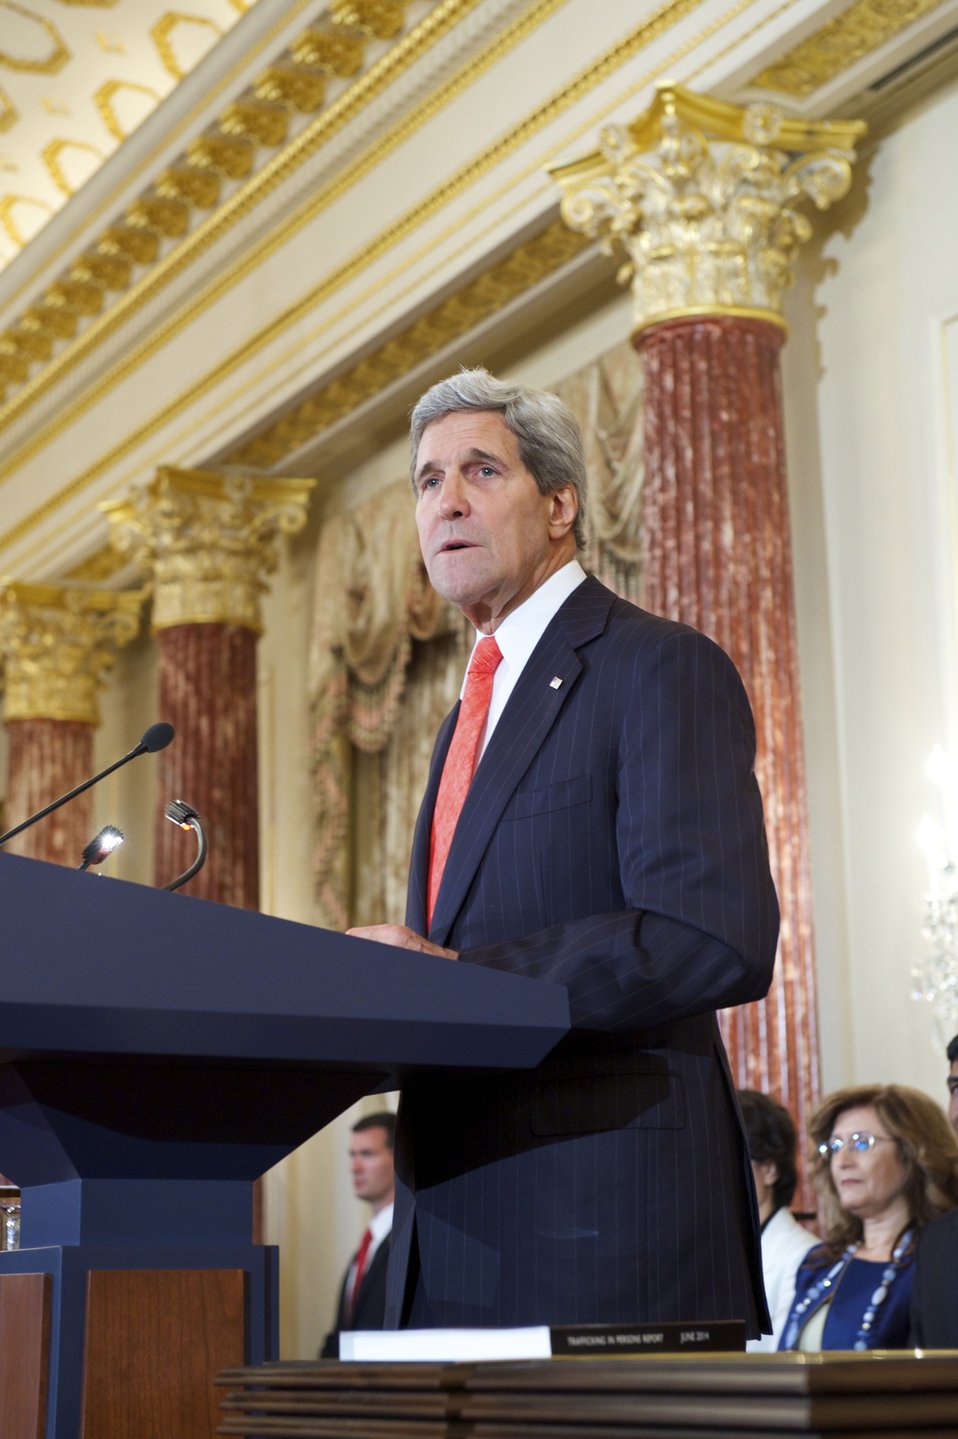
Secretary Kerry Releases the 2014 Trafficking in Persons Report

U.S. Secretary of State John Kerry unveil the 2014 Trafficking in Persons Report, which assesses government efforts around the world to combat modern slavery, at the U.S. Department of State in Washington, D.C., on June 20, 2014. Secretary Kerry also honors the 2014 TIP Report Heroes, 10 men and women whose tireless efforts have made a lasting impact on the global fight against modern slavery.